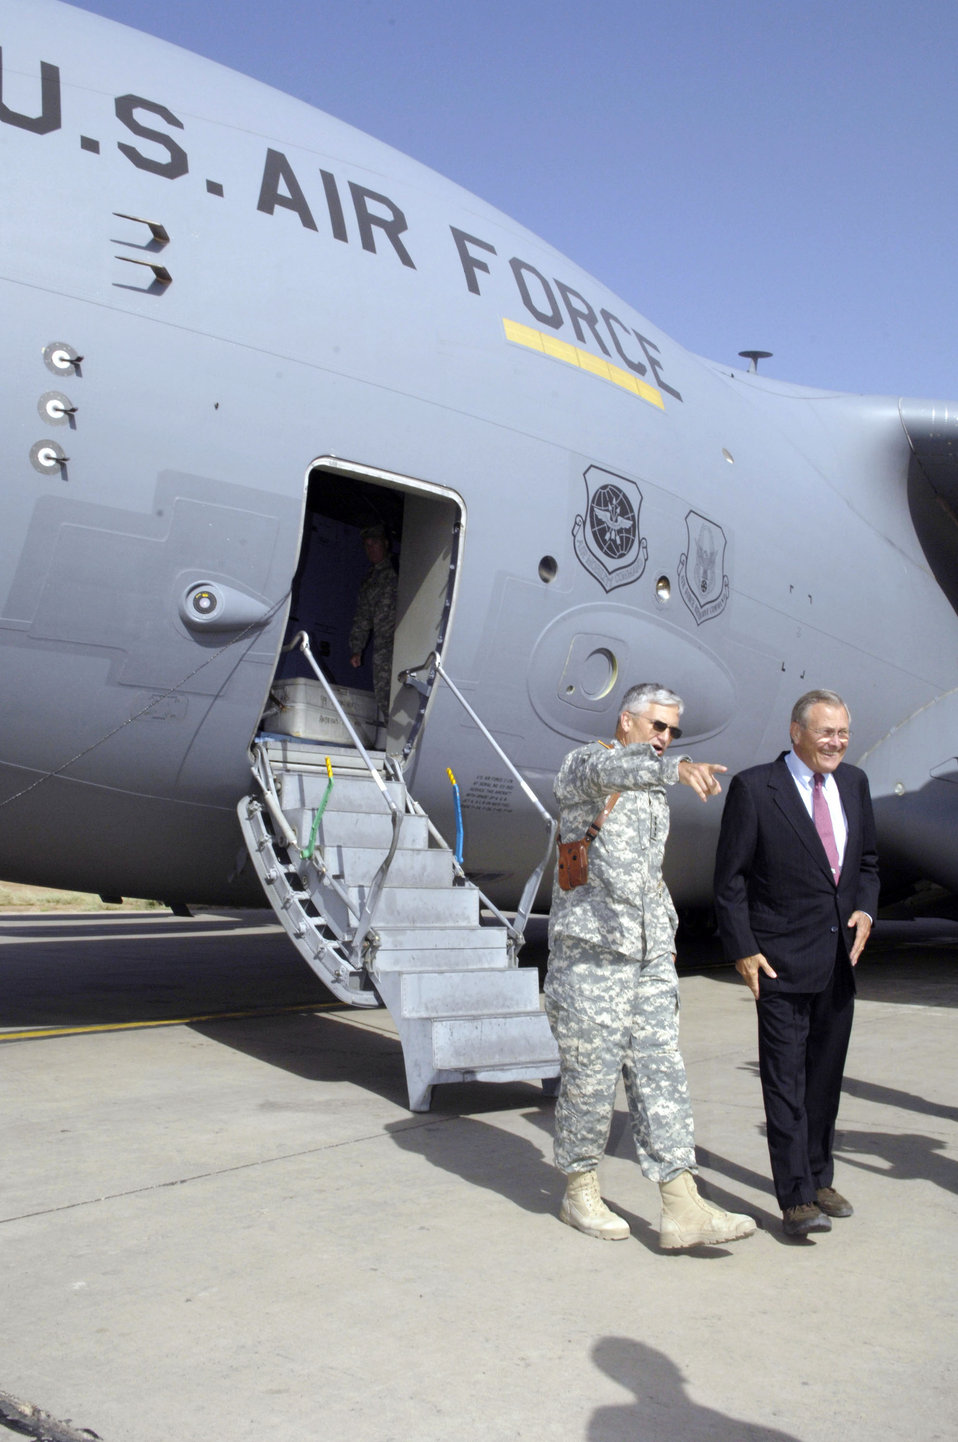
Secretary Rumsfeld visits Balad AB

Army Gen. George W. Casey Jr. walks with Secretary of Defense Donald H. Rumsfeld as the secretary arrives at Balad Air Base, Iraq, on July 12. Secretary Rumsfeld is visiting Iraq to talk with servicemembers. General Casey is commanding general of Multi-National Forces in Iraq.